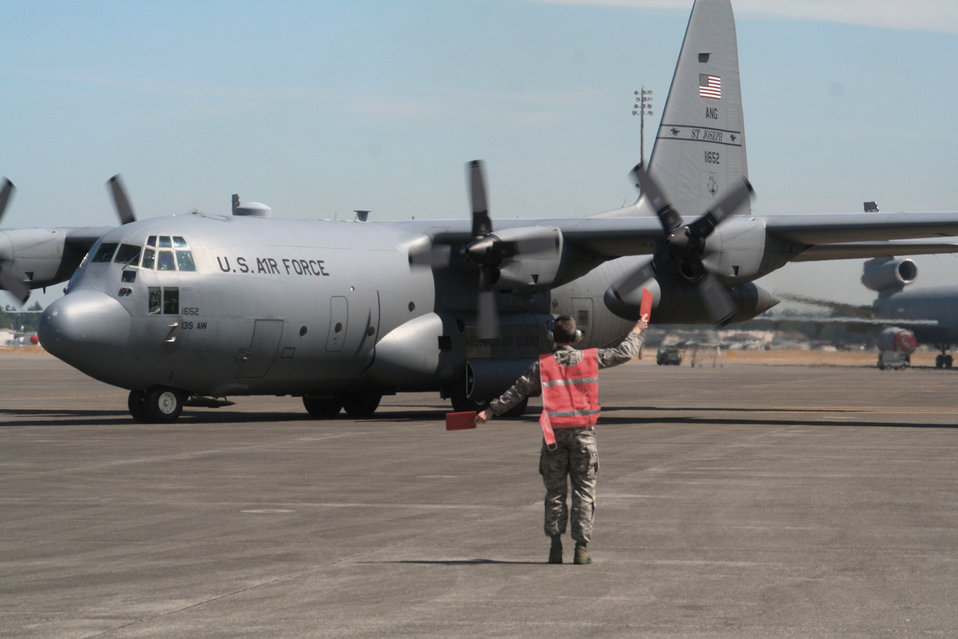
Total force impact evident at Rodeo

A C-130 Hercules from the 139th Airlift Wing of the Missouri Air National Guard taxies after completing a competition mission for Air Mobility Rodeo 2009 July 20 at McChord Air Force Base, Wash. More than 100 teams are participating in the competition including teams from seven foreign countries.